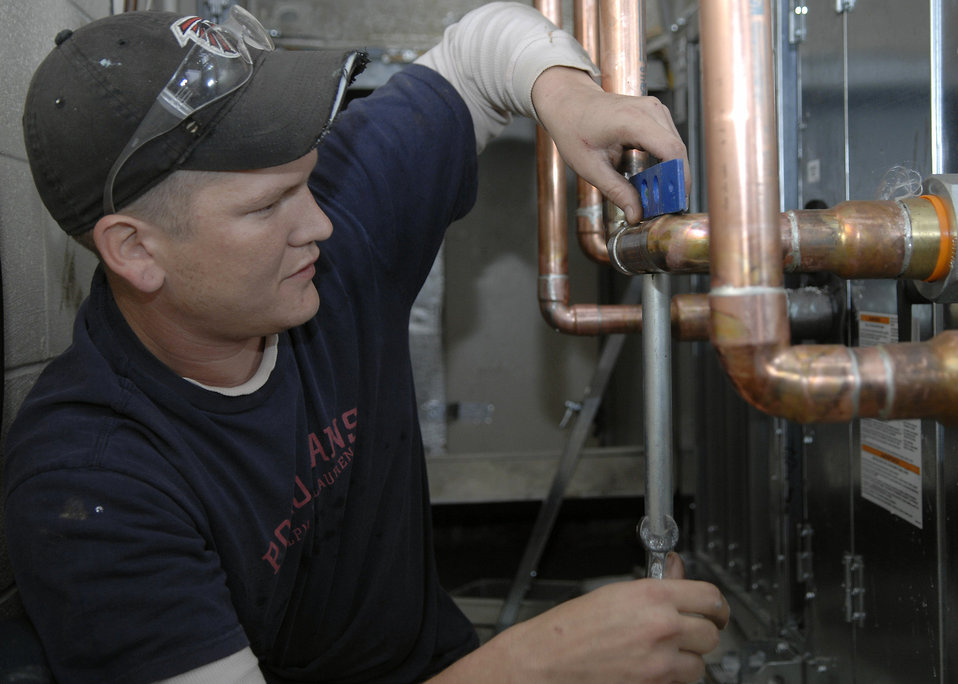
Energy conservation at Charleston AFB, S.C.

Rob Smith levels the supply and return lines Feb. 18 for part of a heating, ventilation and air conditioning system being installed at Charleston Air Force Base, S.C.. Currently, there are four HVAC installation projects taking place at facilities where outdated, inefficient heating and cooling equipment is being replaced with new, energy-efficient equipment and controls to help the base conserve energy. Mr. Smith is a plumber with a local contractor.